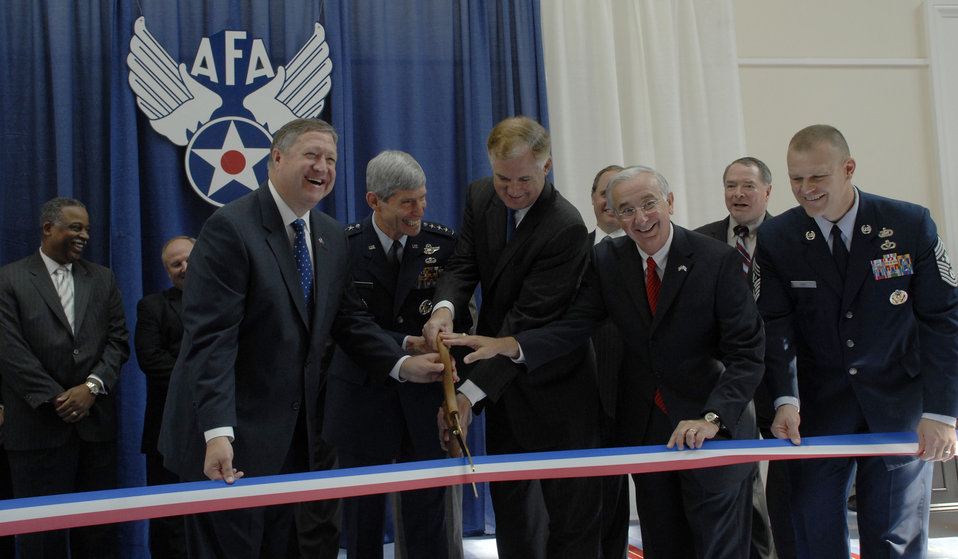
Air Force officials recognize 12 Outstanding Airmen of Year

Secretary of the Air Force Michael Donley, Air Force Chief of Staff Gen. Norton Schwartz and Chief Master Sergeant of the Air Force James A. Roy welcome conference attendees during a ribbon-cutting ceremony at the 2009 Air Force Association Air & Space Conference and Technology Exposition Sept. 14, 2009, in Washington D.C.